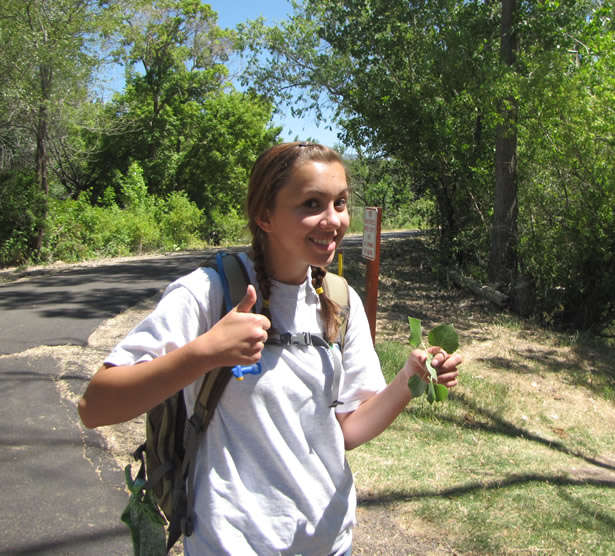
Youth Conservation Corps Participant Gives a Thumbs Up